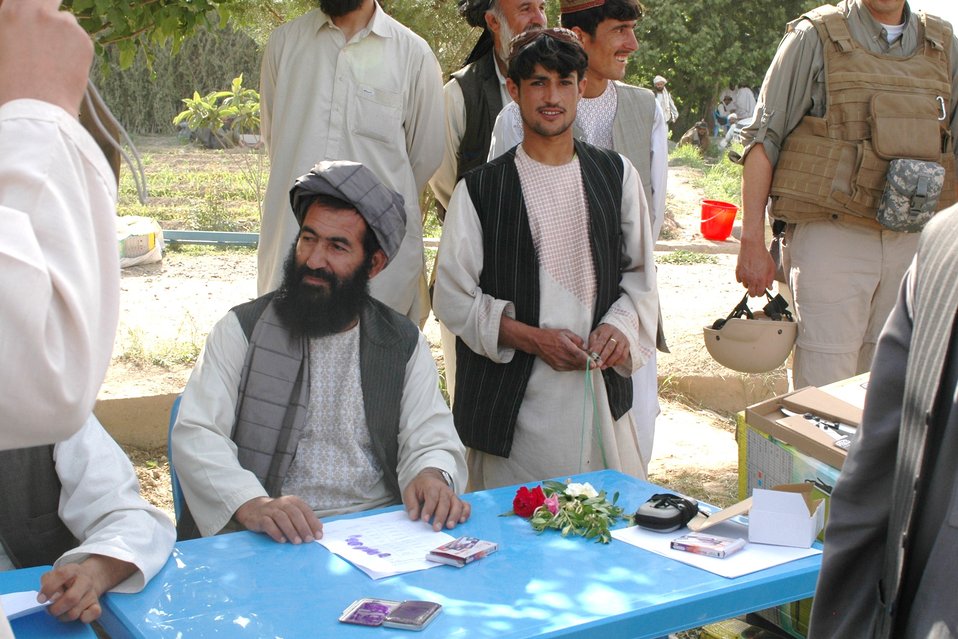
Dr Shah Visits Argandab April 10, 2010